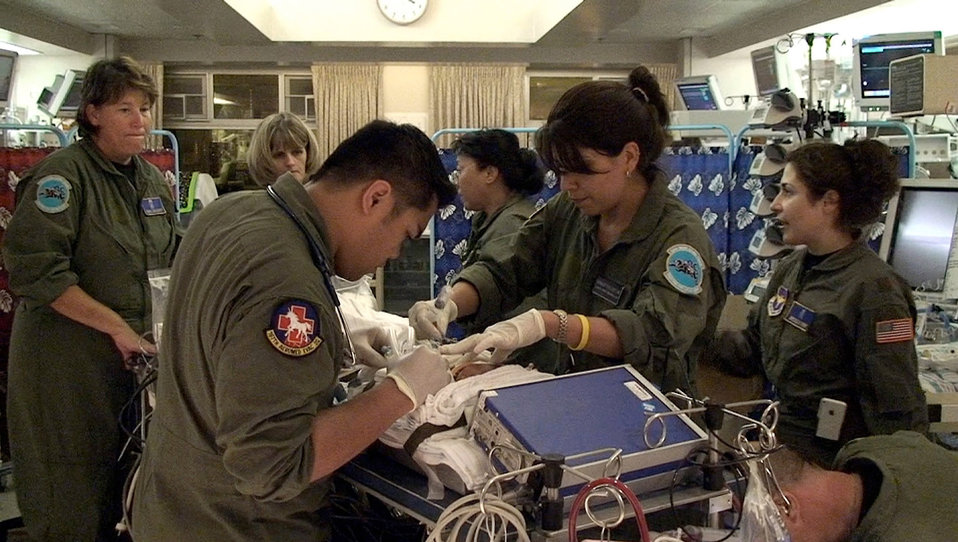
WHMC ECMO team

The Wilford Hall Medical Center's extra corporeal membrane oxygenation team stabilizes the infant on the ECMO transport cart in the neonatal intensive care unit at Kapiolani Medical Center in Honolulu July 22. The ECMO team flew to Hawaii to transport the critically ill infant to Rady Children's Hospital in California for advanced medical treatment. Left to right, NICU Respiratory Therapist Airman 1st Class Andrew Pamintuan, 59th Medical Operations Squadron, senior ECMO coordinator Cheryl Collicott, 59th Medical Inpatient Squadron, Neonatal Fellow Capt. (Dr.) Jennifer Pirato, 59th Maternal/Child Care Squadron, Nurses Aida Yumol, Bernadette Elliott, 59th MDIS, Maj. (Dr.) Melissa Tyree, 59th MCCS, Nurse Capt. Terry Bailey, 59th MDIS.